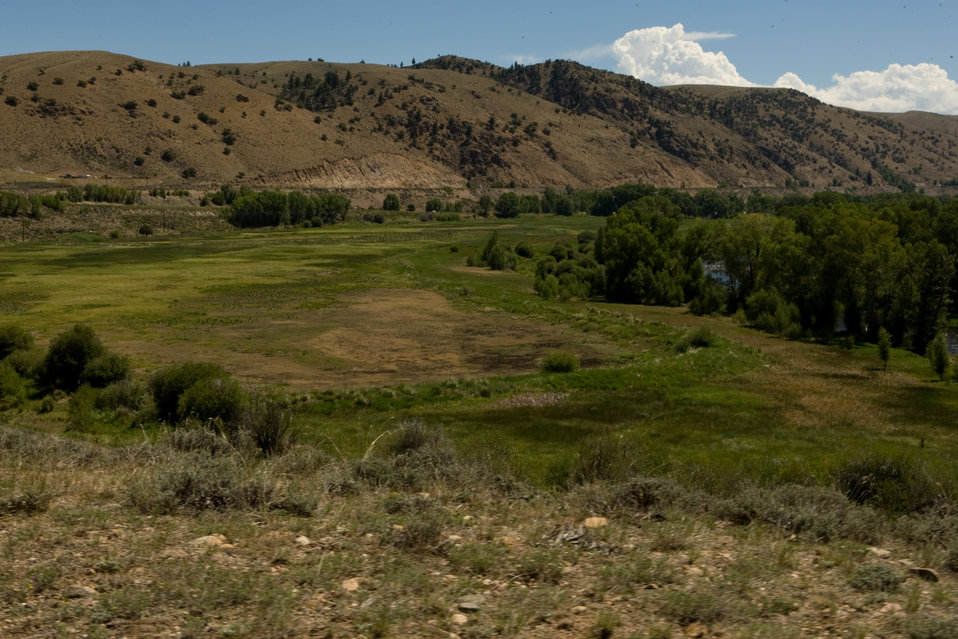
Colorado Rare Plant Conservation Initiative

The Colorado Rare Plant Conservation Initiative (RPCI) is a partnership of 23 statewide and regional agencies, private organizations, and academic institutions working to conserve 121 rare plants in Colorado. As part of these efforts the group developed the Colorado Rare Plant Conservation Strategy, developed Best Management Practices to reduce energy development impacts, addressed climate change, and developed focused strategies for the conservation of individual species at eight priority landscapes. The group has also worked to coordinate volunteer efforts for plant conservation across the state.